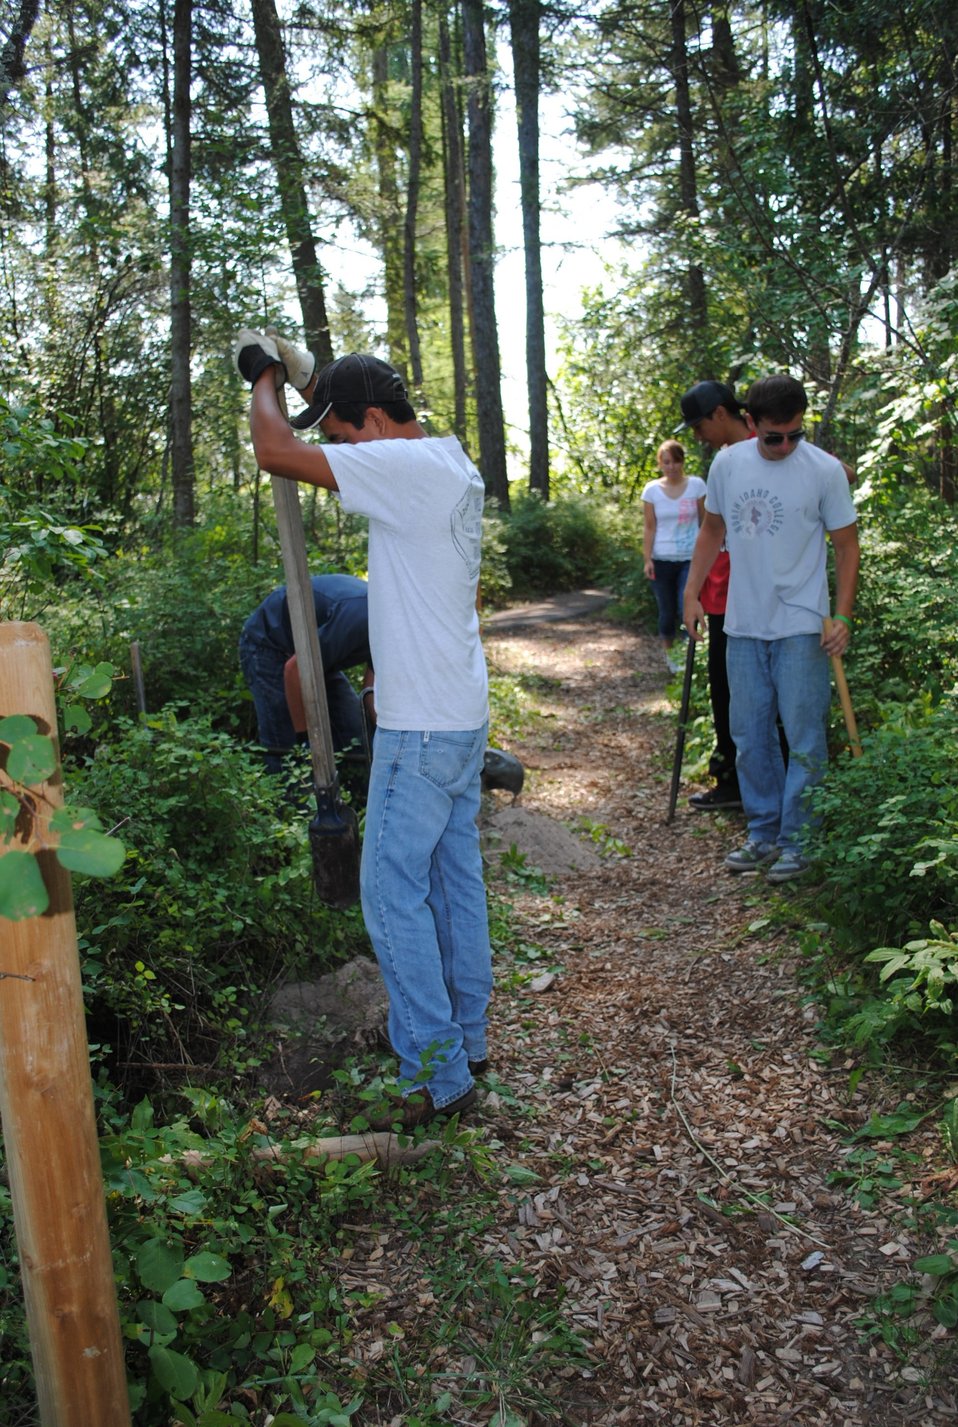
The Montana Tribal Youth Conservation Corps Many Summer Projects

Austin Moran one of two youth leaders diggning a hole for a fence post at the Creston Fish Hatchery's Nature Trail.

The eight-week YCC program gives young people experience working on many different projects. These jobs were both on the Confederated Salish and Kootenai Reservation and at the Creston National Fish Hatchery and included scraping and painting buildings, cleaning hatchery fish tanks, restoring acres of native plants, controlling noxious weeds, surveying weeds, pit tagging fish, building and maintaining trails and habitat fences, installing a nature based outdoor classroom, planting native vegetation, surveying for lizards, gathering tree moss, clearing brush, working with swans, picking up trash along the Flathead River, as well as a variety of activities on the National Bison Range.